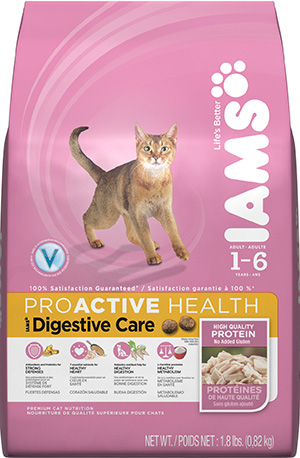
RECALLED – Dog and Cat foods - Dry

August 14, 2013 – Product Recall – P&G Voluntarily Recalls Limited Quantity of Dry Pet Food Due to Possible Health Risk.